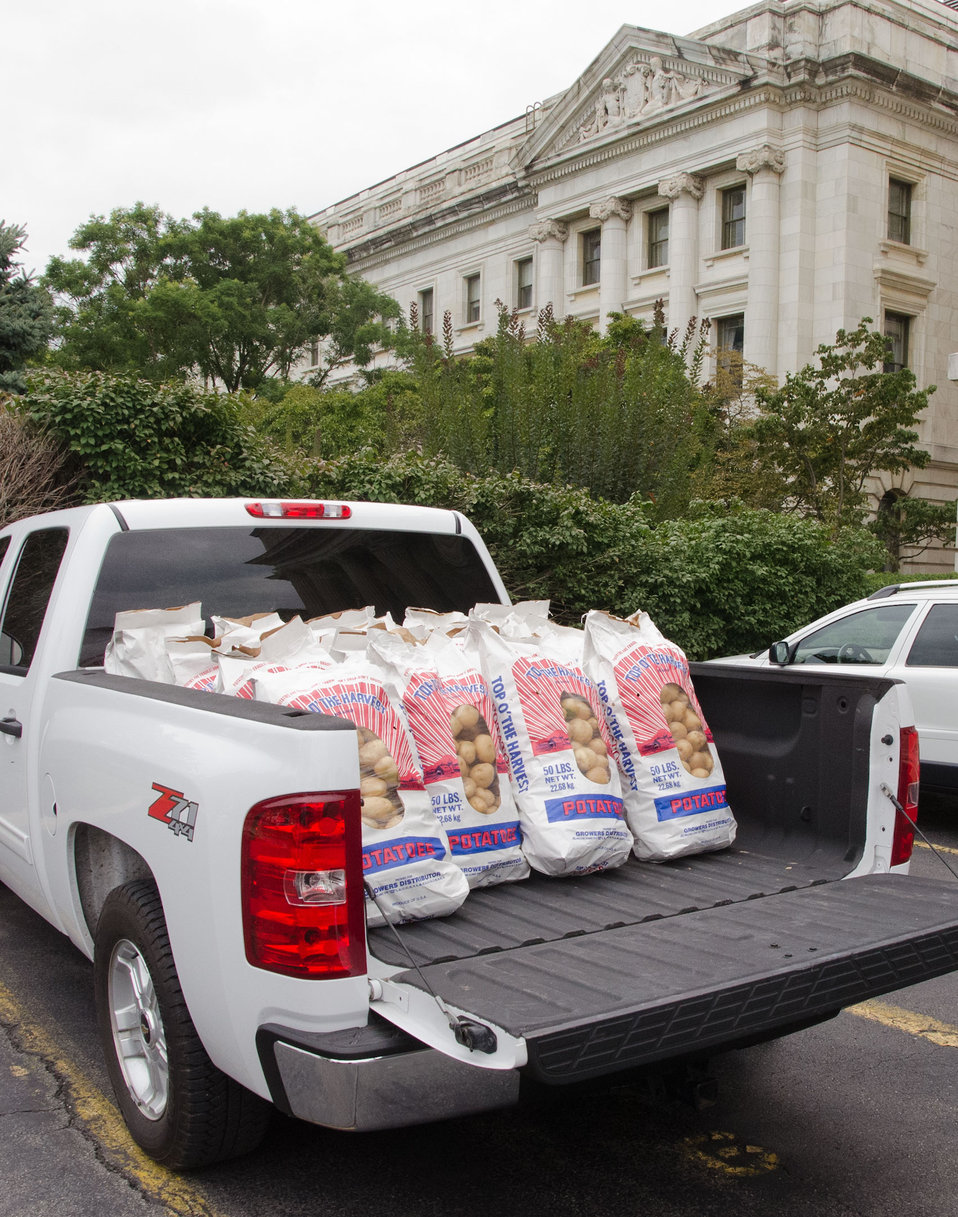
Agriculture Under Secretary for Farm and Foreign Agriculture Service (FFAS) Michael Scuse donates 1,000 pounds of potatoes to DC Central Kitchen, for the Feds Feed Families Food Drive, on Monday, August 20, 2012 in front of the Agriculture headquarters in Washington, D.C. Under Secretary Scuse, a farmer himself purchased the half-ton of potatoes at Wicks farm, near his own farm, in Delaware.